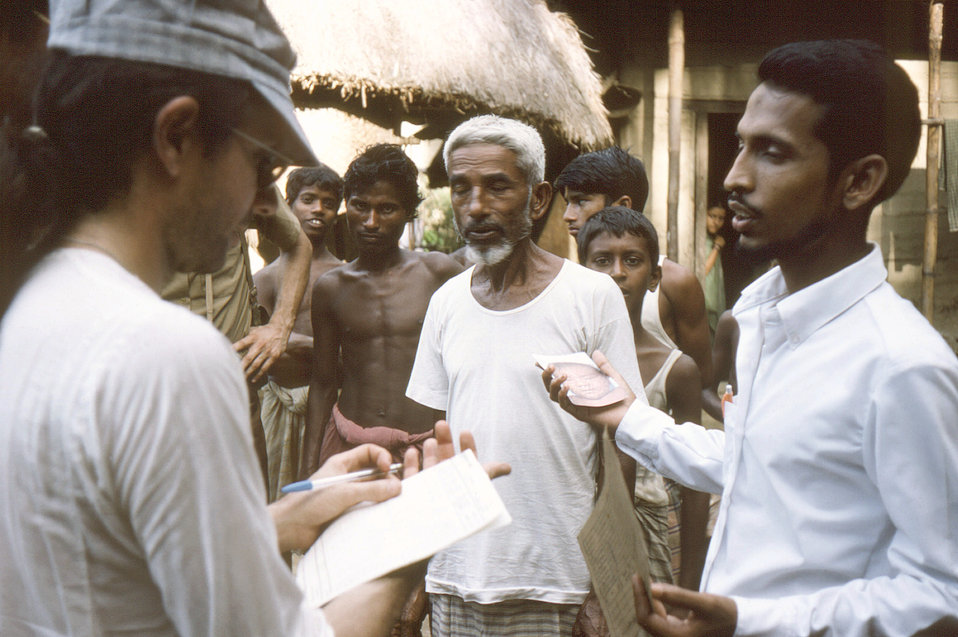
Photographed in the Sylet District of north-eastern Bangladesh, wearing a cap, was Dr. Michael Schwartz, along with his translator as they were in the process of conducting a national search for smallpox. In this particular view, the translator was questioning the bearded man, in order to find out whether or not he knew where to go to report a suspected smallpox case, and if he knew about the reward offered for reporting smallpox.